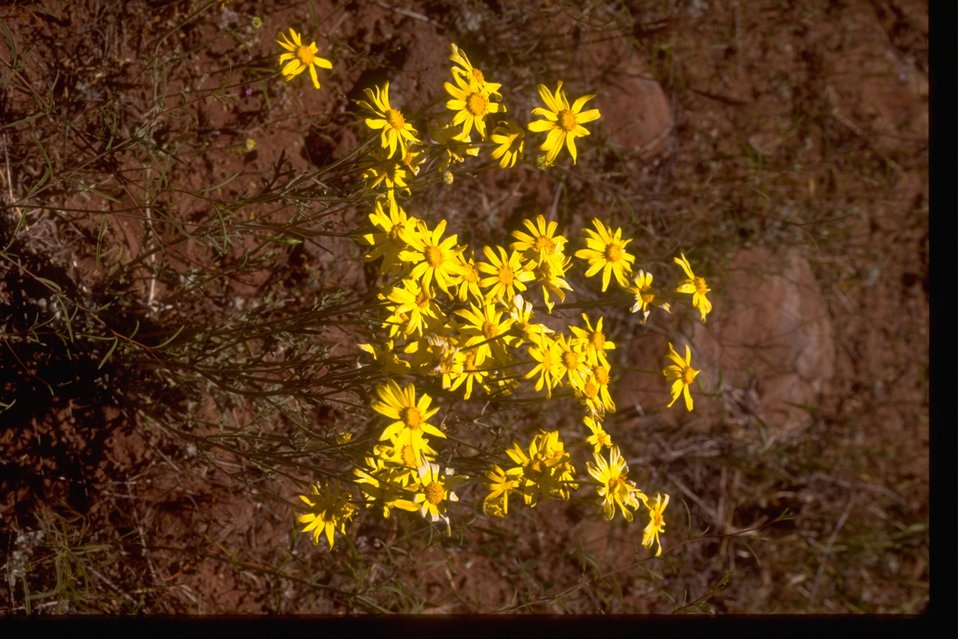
Wildflowers near Steens Mountain.